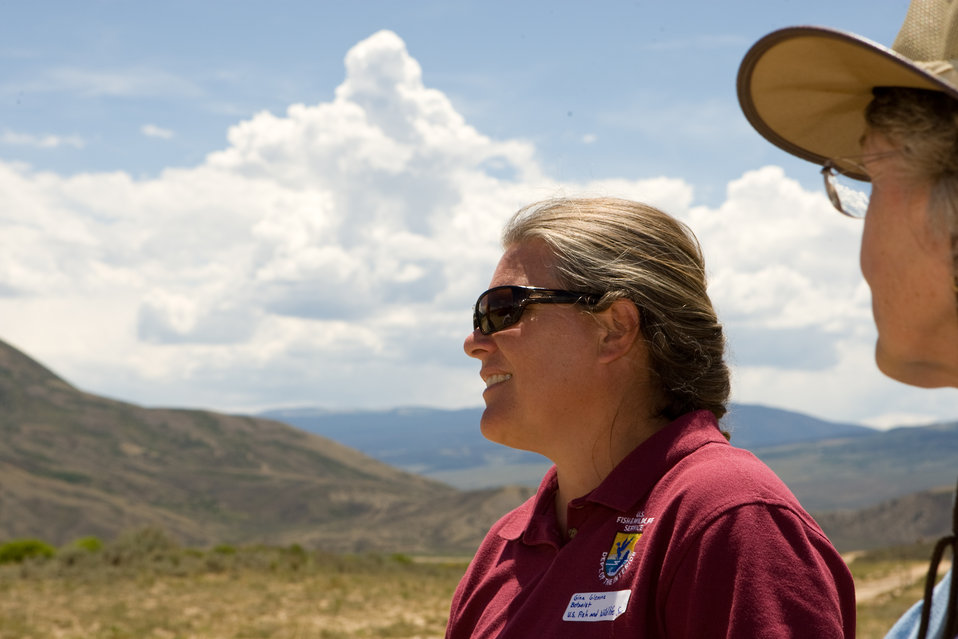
Colorado Rare Plant Conservation Initiative

The Colorado Rare Plant Conservation Initiative (RPCI) is a partnership of 23 statewide and regional agencies, private organizations, and academic institutions working to conserve 121 rare plants in Colorado. As part of these efforts the group developed the Colorado Rare Plant Conservation Strategy, developed Best Management Practices to reduce energy development impacts, addressed climate change, and developed focused strategies for the conservation of individual species at eight priority landscapes. The group has also worked to coordinate volunteer efforts for plant conservation across the state.